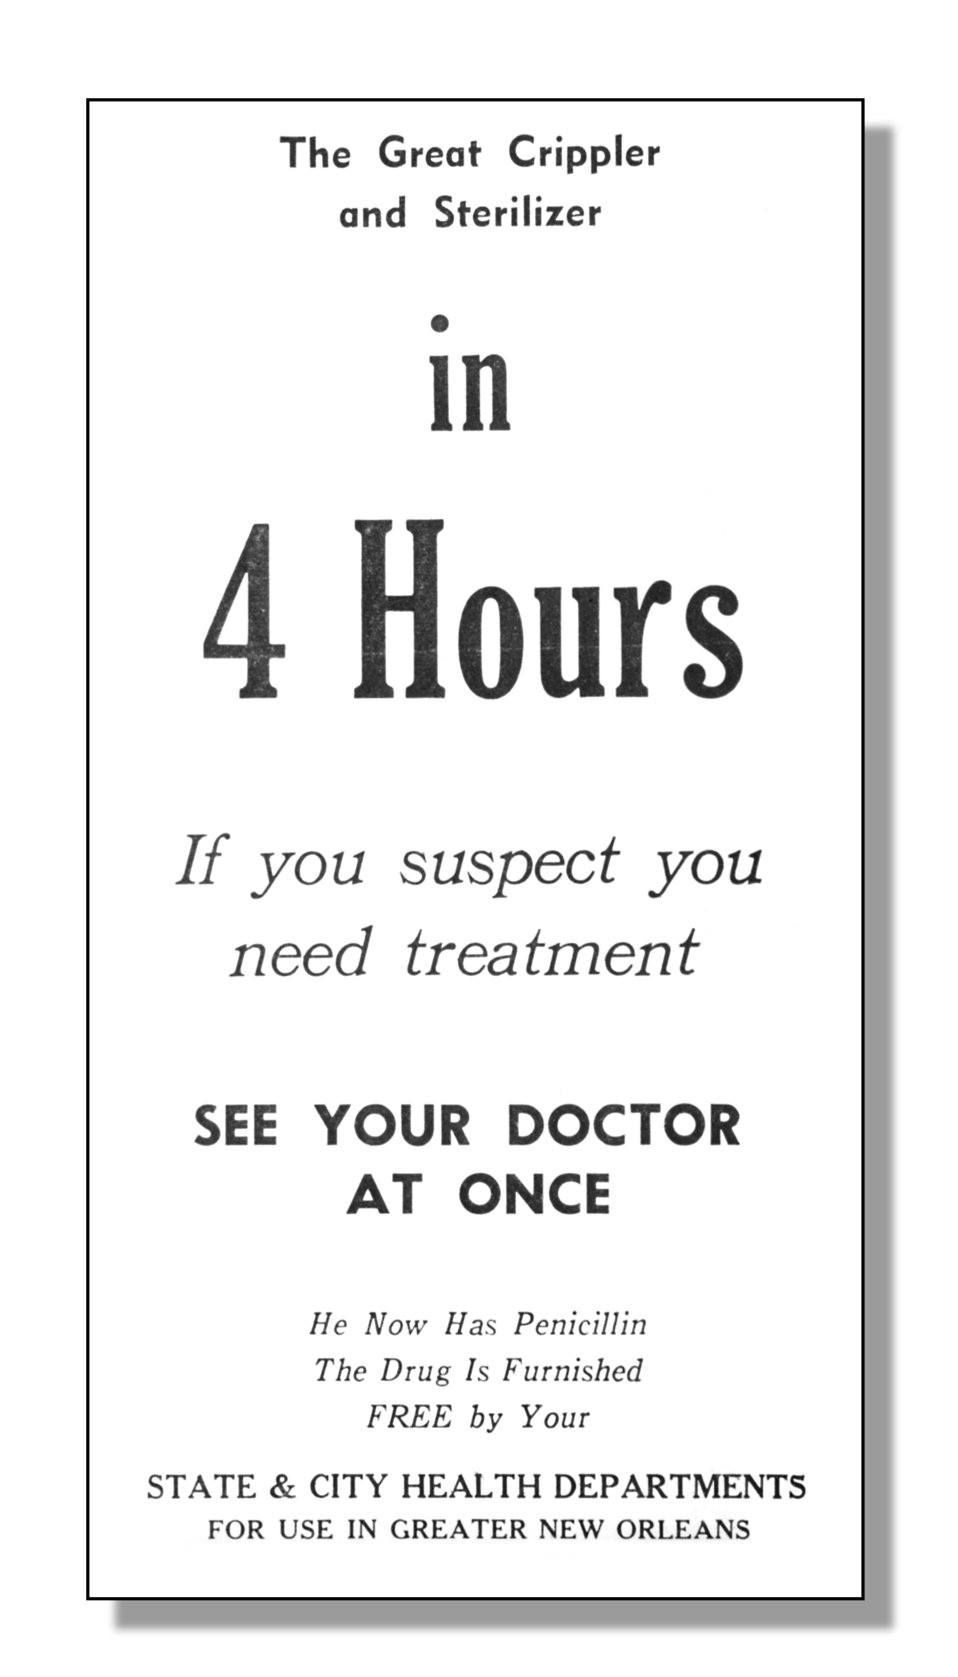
This was an early poster promoting penicillin as a treatment for gonorrhea.